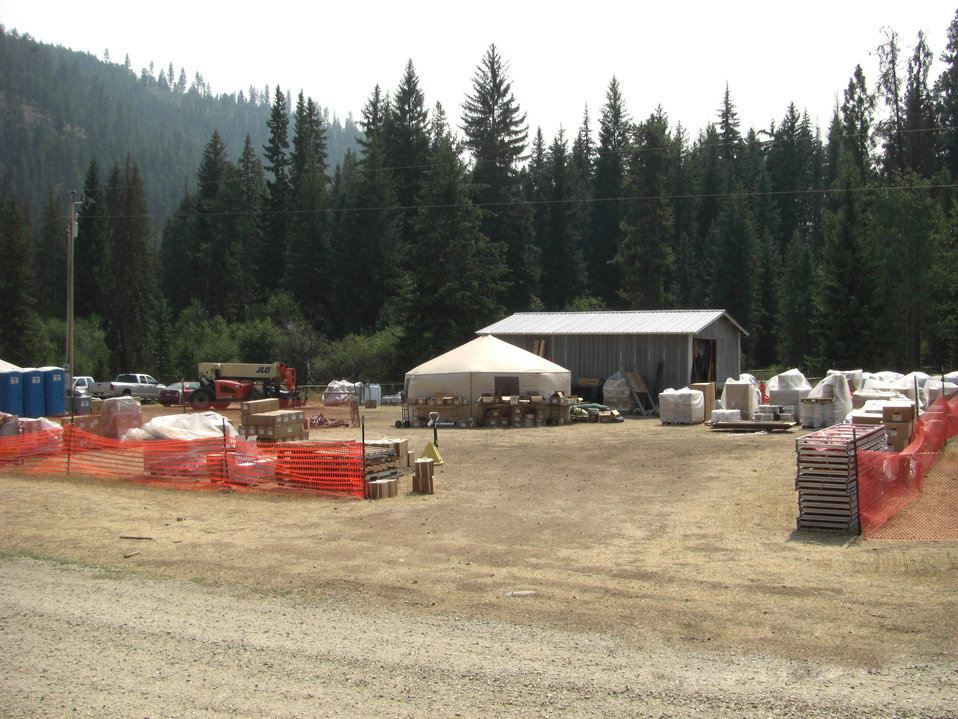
The supply unit stocks all necessary supplies for fire crews at the Gold Pan Fire Incident Command Post. The Gold Pan Fire in the Bitterroot National Forest near Conner, MT began by lightning on Jul. 16, 2013 by lighting have consumed approximately 39,927 acres.